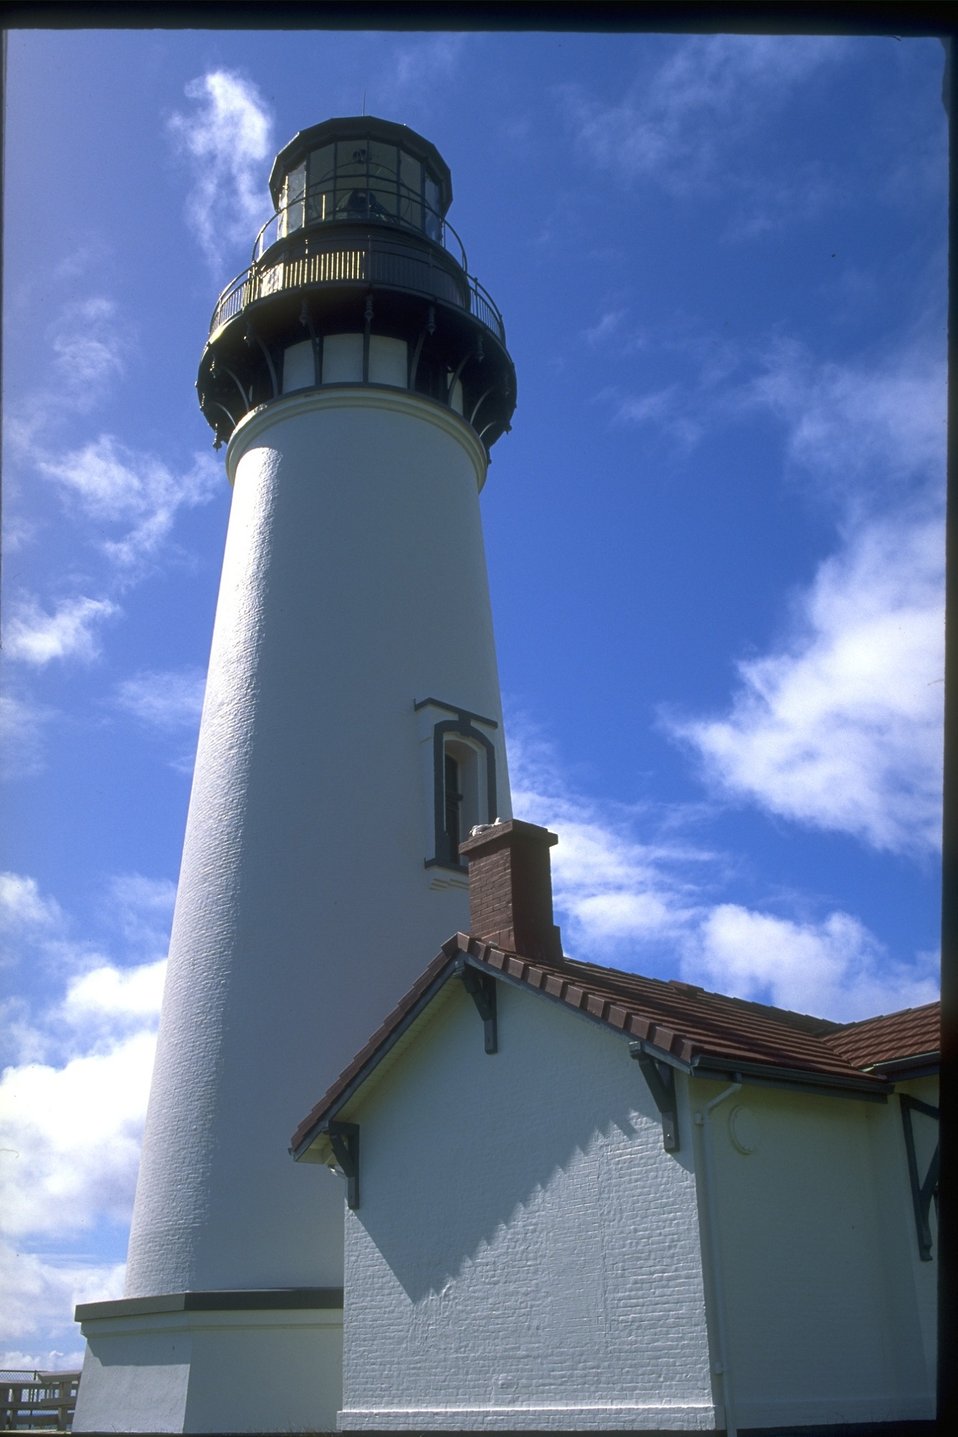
Yaquina Head Lighthouse.